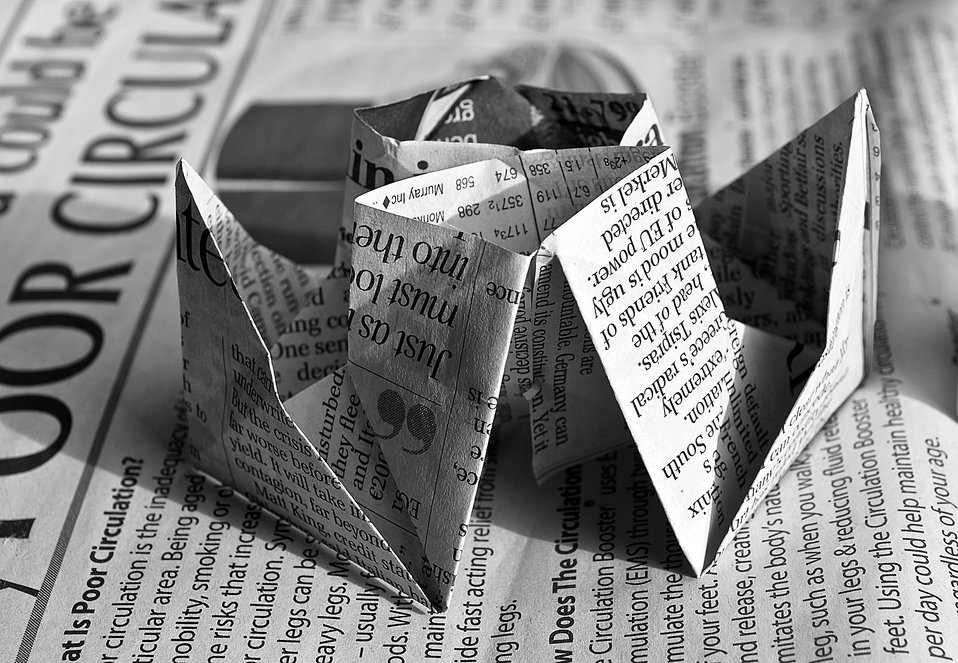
Paper boats.